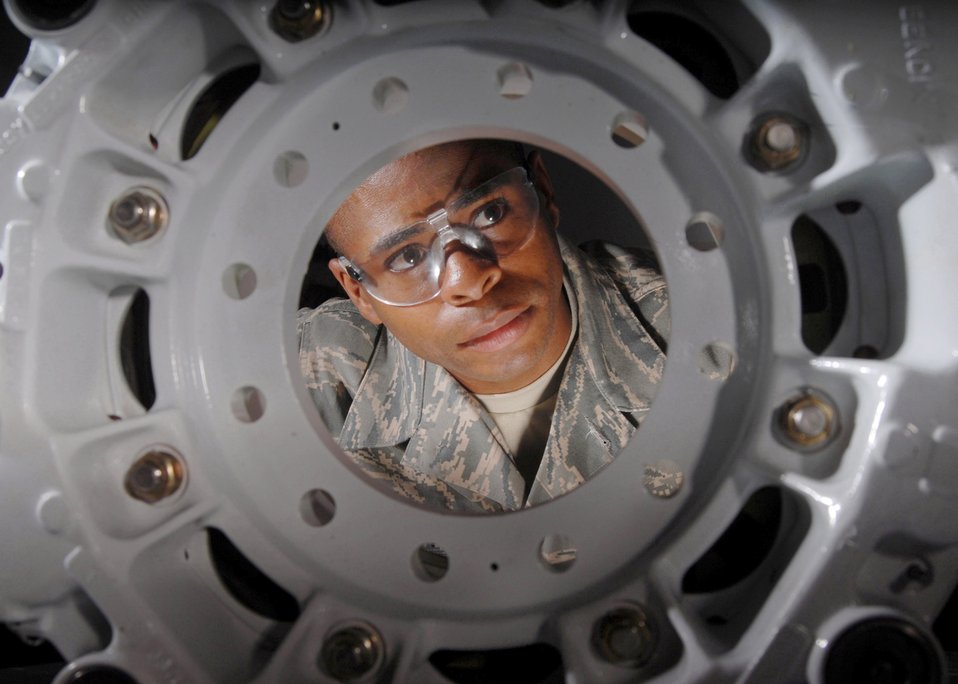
No problems here

Tech. Sgt. Alan L. Scott inspects a KC-135 Stratotanker brake assembly July 30 at March Air Reserve Base, Calif. He is a pneudraulics technician from the 452nd Maintenance Squadron.